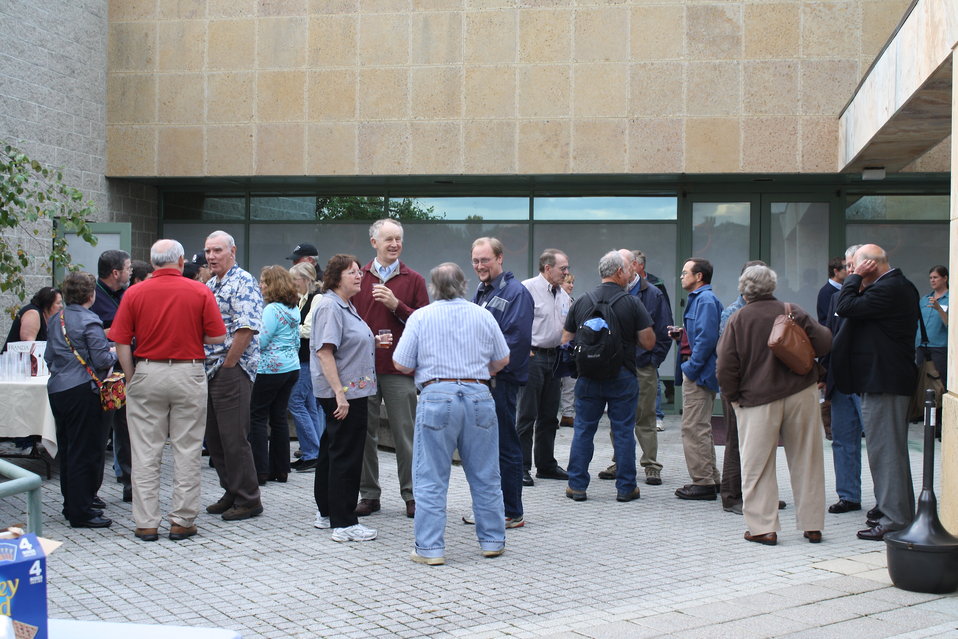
Patuxent Research Refuge 75th Anniversary

Symposium attendees eat dinner at an afternoon barbecue.